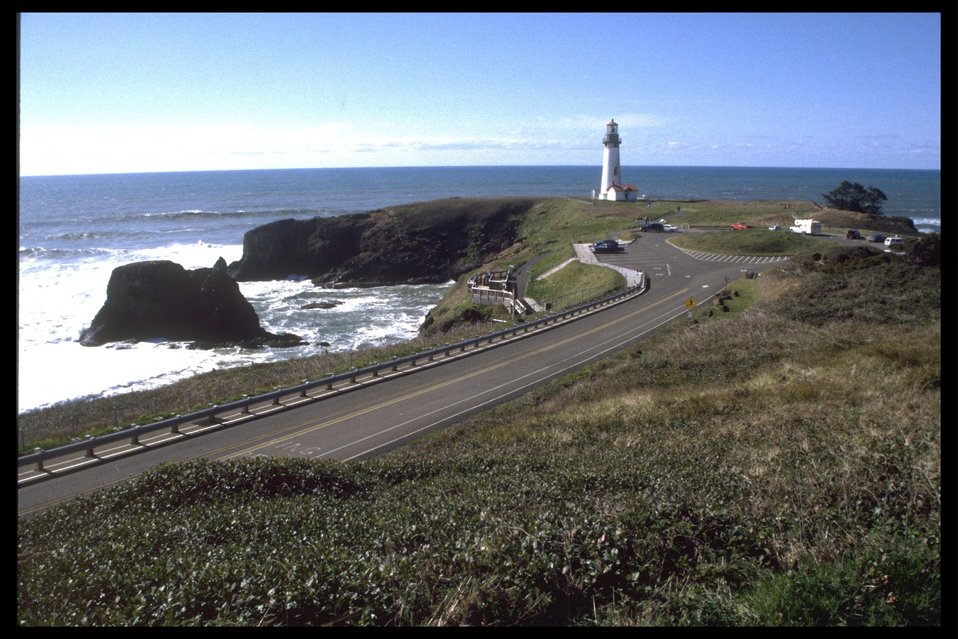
Yaquina Head Lighthouse.